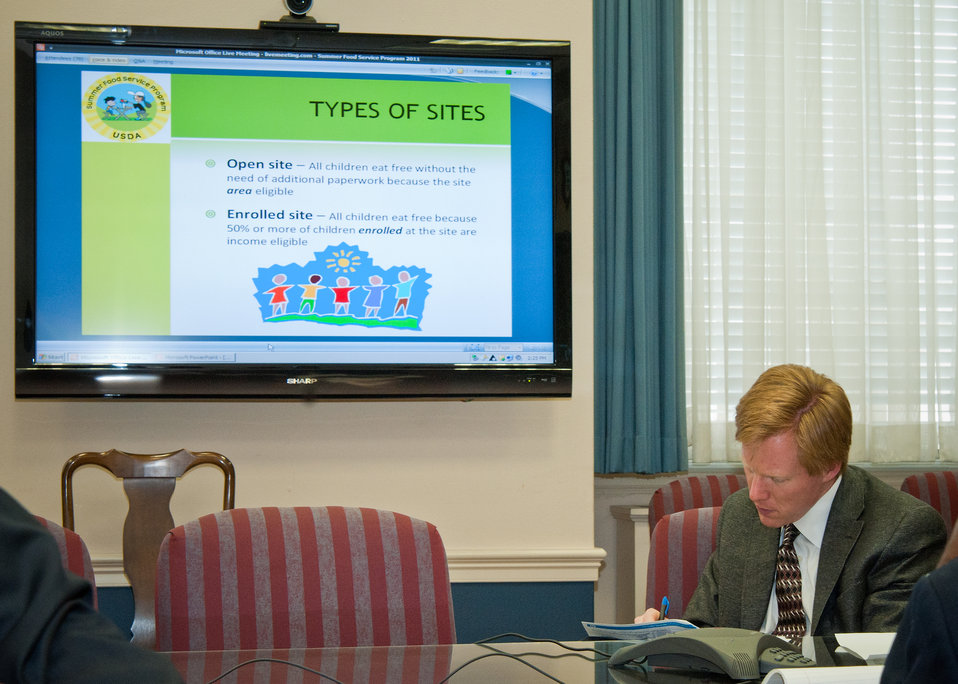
Max Finberg, Director, Center for Faith Based and Neighborhood Partnerships (CFBNP) takes notes during a Summer Food Service Program Webinar Watch Party with members of the Church of God in Christ at the United States Department of Agriculture (USDA), on Friday, May 13, 2011. The CFBNP hosted the webinar to demonstrate the process of developing a summer food program for civic institutions. The Summer Food Service Program formed by the Food and Nutrition Service was created to ensure that children in low-income areas could continue to receive nutritious meals during long school vacations, when they do not have access to school lunch or breakfast. The SFSP is the single largest Federal resource available for local sponsors who want to combine a feeding program with a summer activity program.